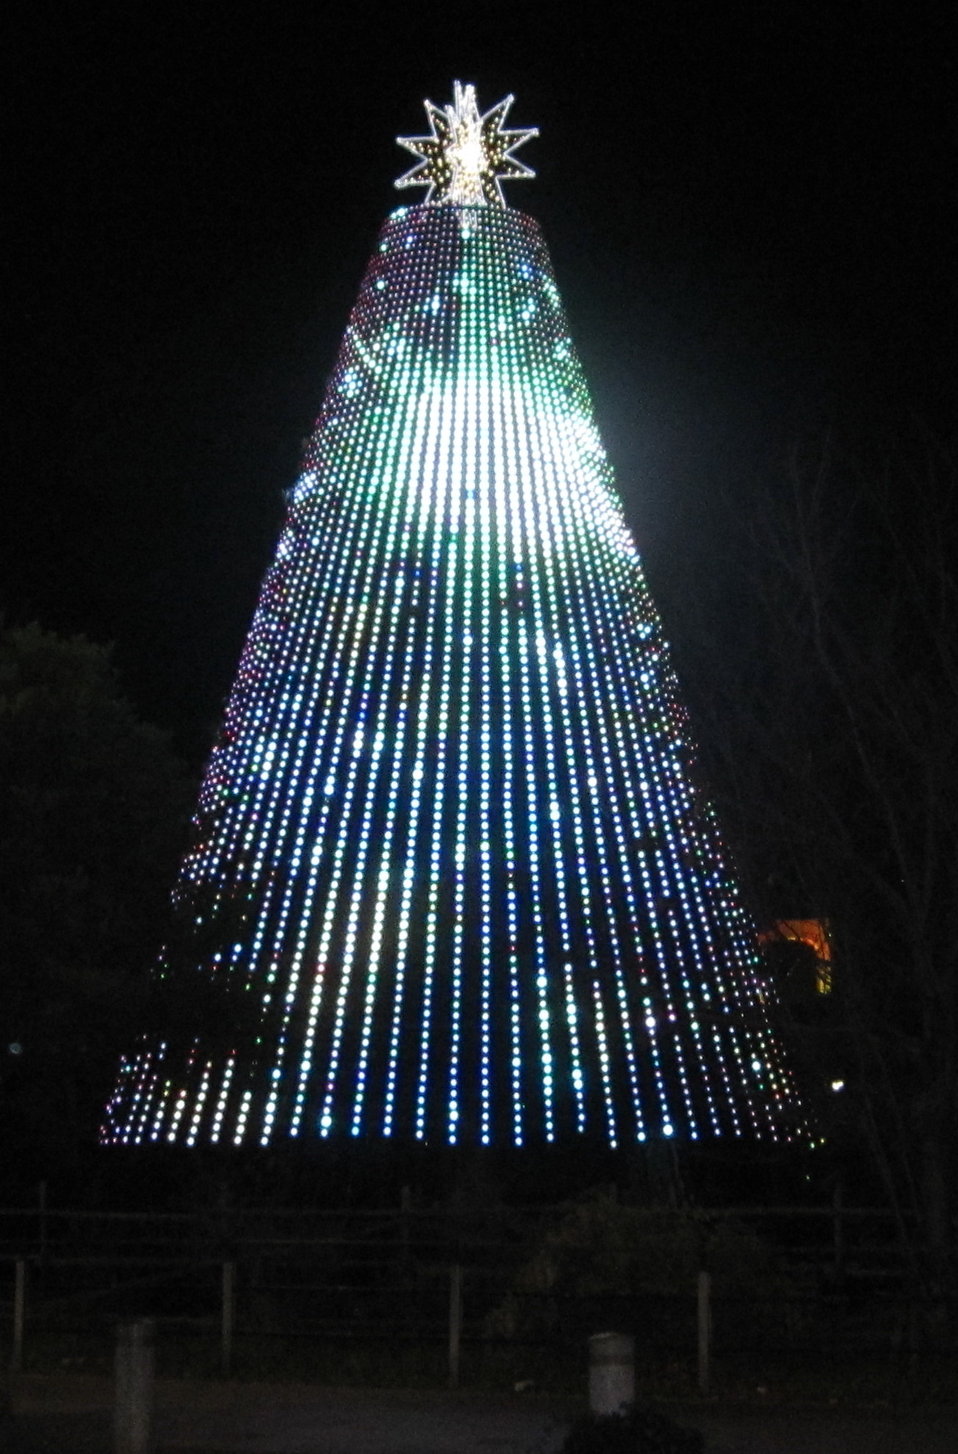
台場メモリアルツリー Sting lights on a mémorial tree.